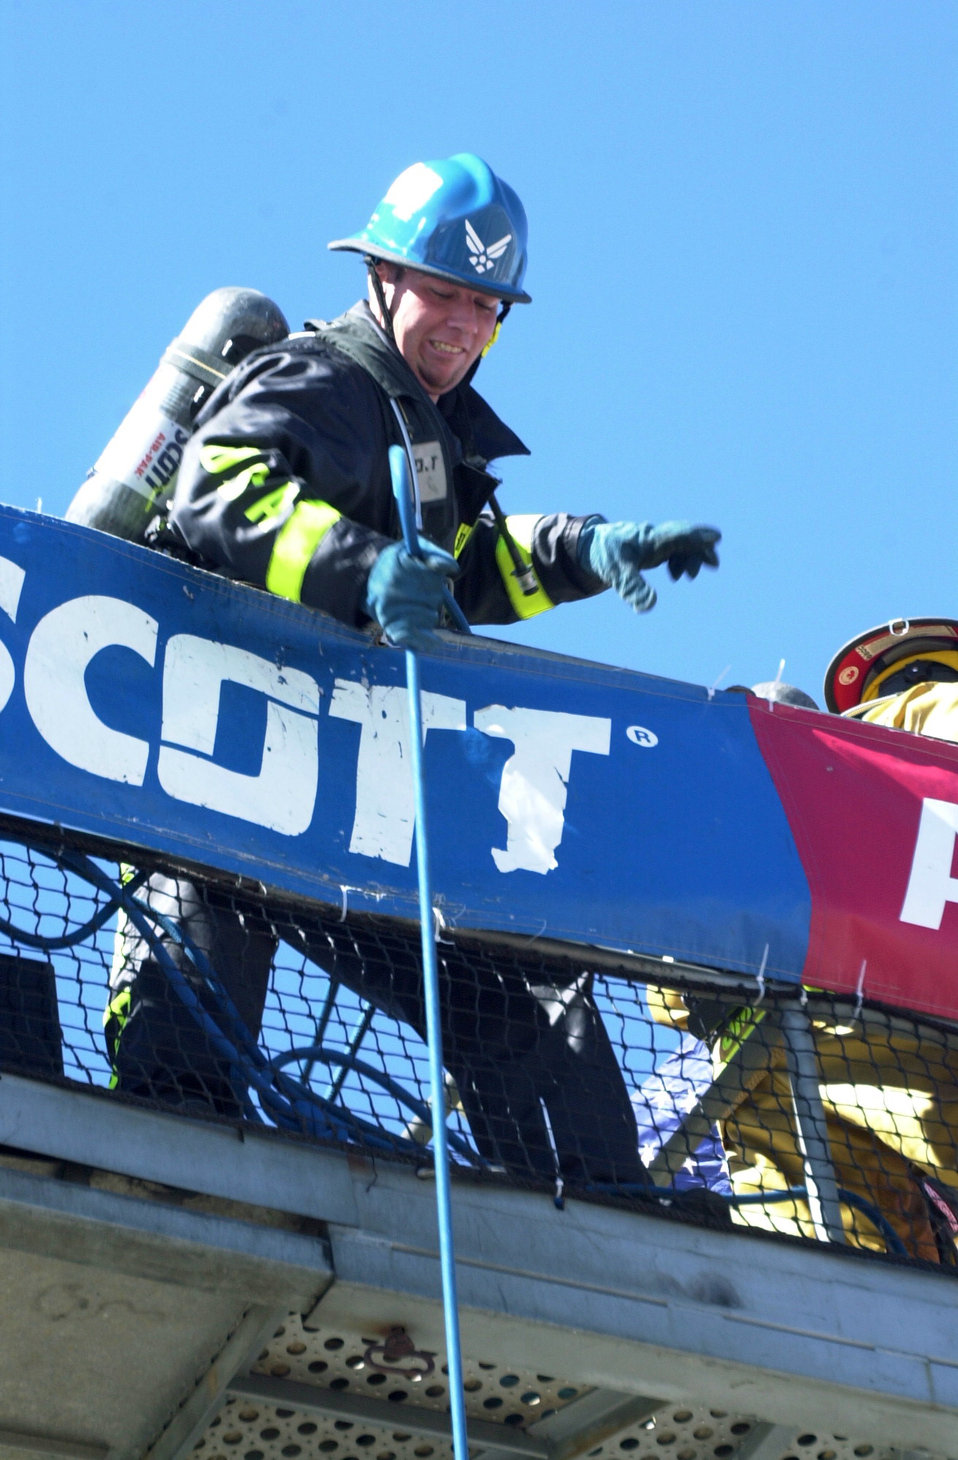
Firefighters up for the challenge

EL PASO, Texas -- Staff Sgt. Harry Myers races the clock to hoist a 45-pound pack up a six-story tower during a relay competition at the U.S. National Firefighter Combat Challenge Championships here Oct. 23. Sergeant Myers is from Travis Air Force Base, Calif.